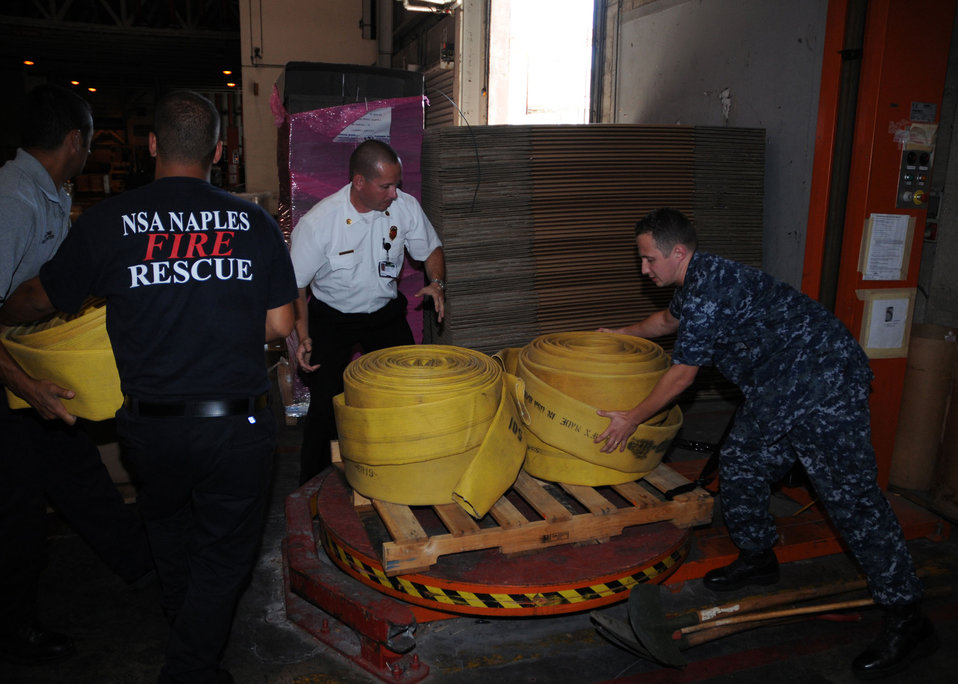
Logistic Specialist 2nd Class (SW) Vitali Toptchenko NSA Naples Lead Fire Inspector Hanz Christian, and Italian National Firefighters Maurazio Patrone and Alessio Storto Load a Pallet of Firefighting Equipment

Logistic Specialist 2nd Class (SW) Vitali Toptchenko, NSA Naples Lead Fire Inspector Hanz Christian, and Italian national firefighters Maurazio Patrone and Alessio Storto load a pallet of firefighting equipment destined for Russia to help combat wildfires on August 11, 2010, in Naples, Italy. The U.S. Navy routinely provides foreign humanitarian assistance in times of crisis, in the same manner as many nations around the world.